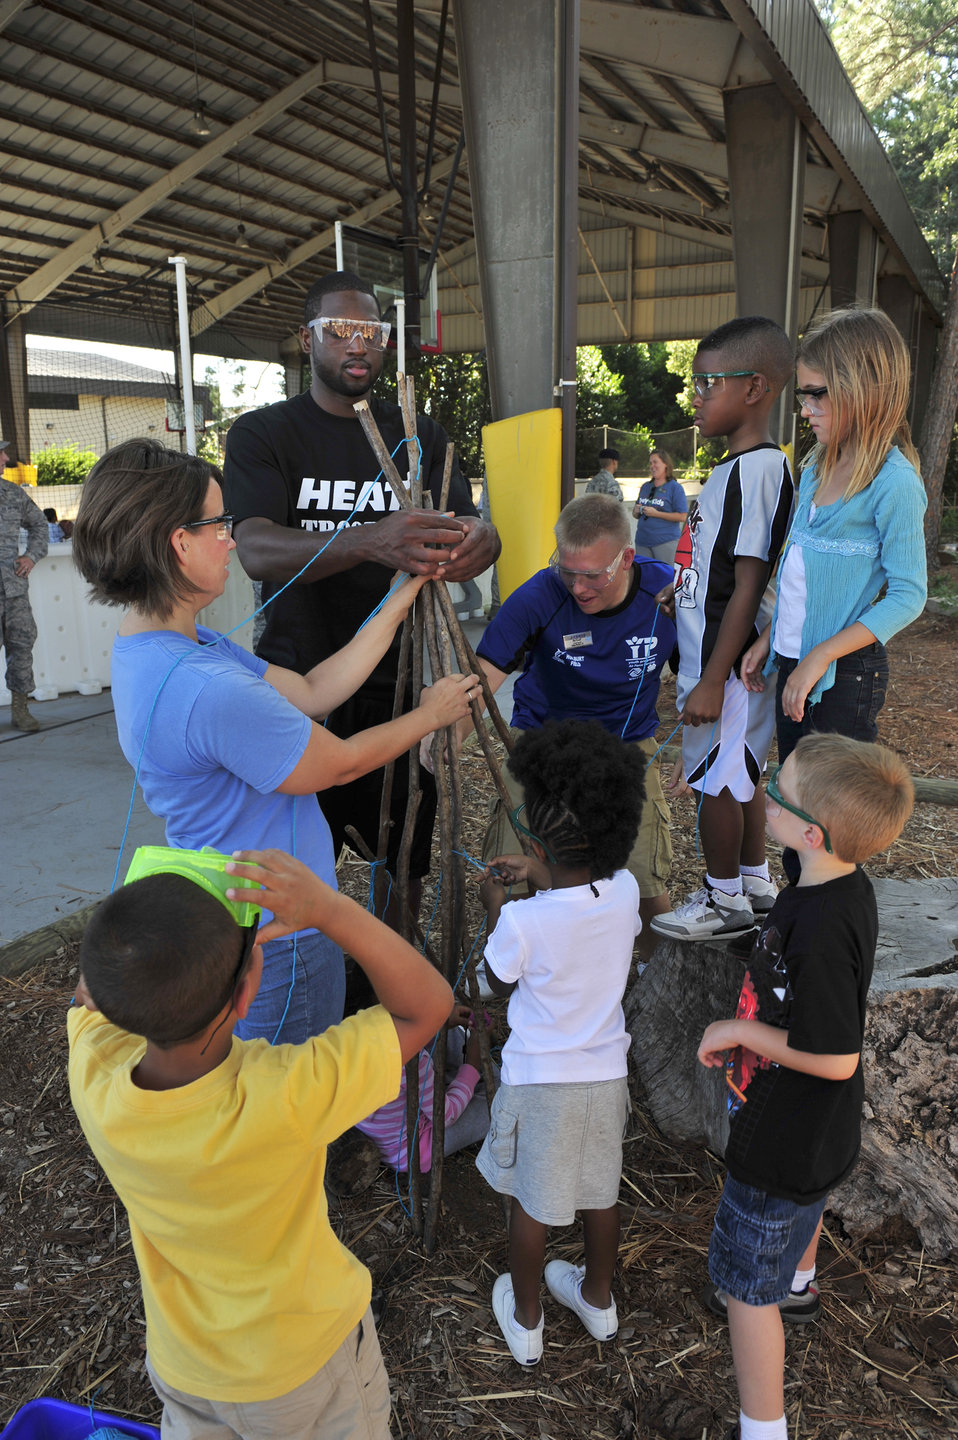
Nature-deficit disorder

Dwayne Wade works on a team building activity with children at the outdoor classroom at the youth center Sept. 30, 2010, at Hurlburt Field Fla. In November 2009 the classroom became the 29th Arbor Day Foundation and Dimensions Educational Research Foundation-certified Nature Explore classroom in the country. Mr. Wade is player for the NBA's Miami HEAT.